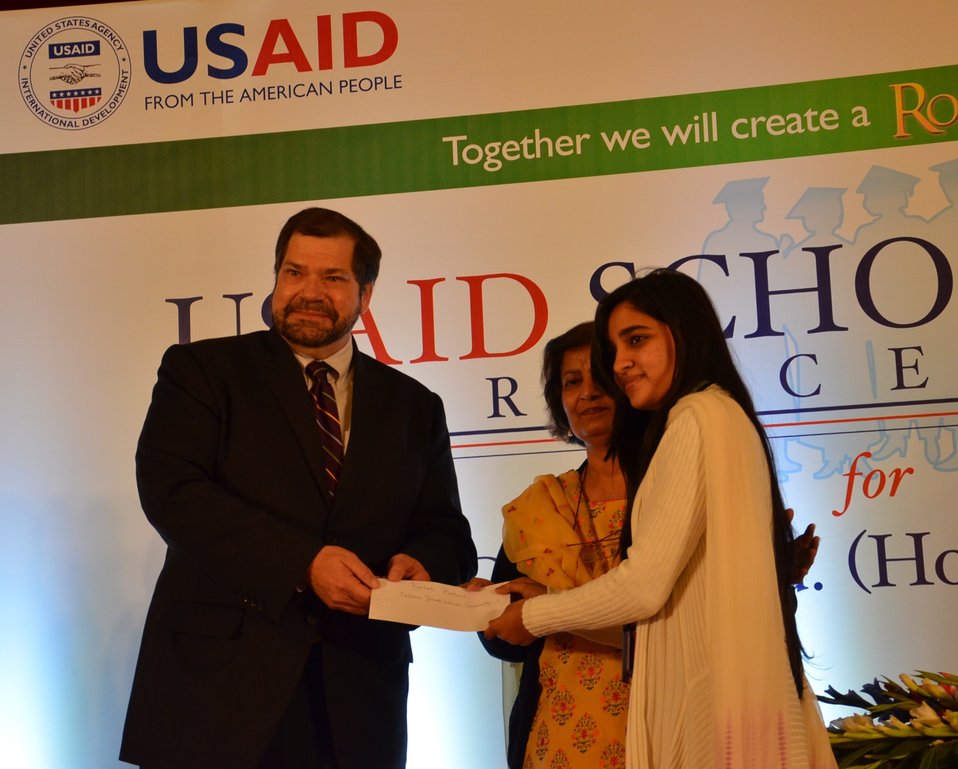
Mr. Bakken awarding USAID scholarship 2